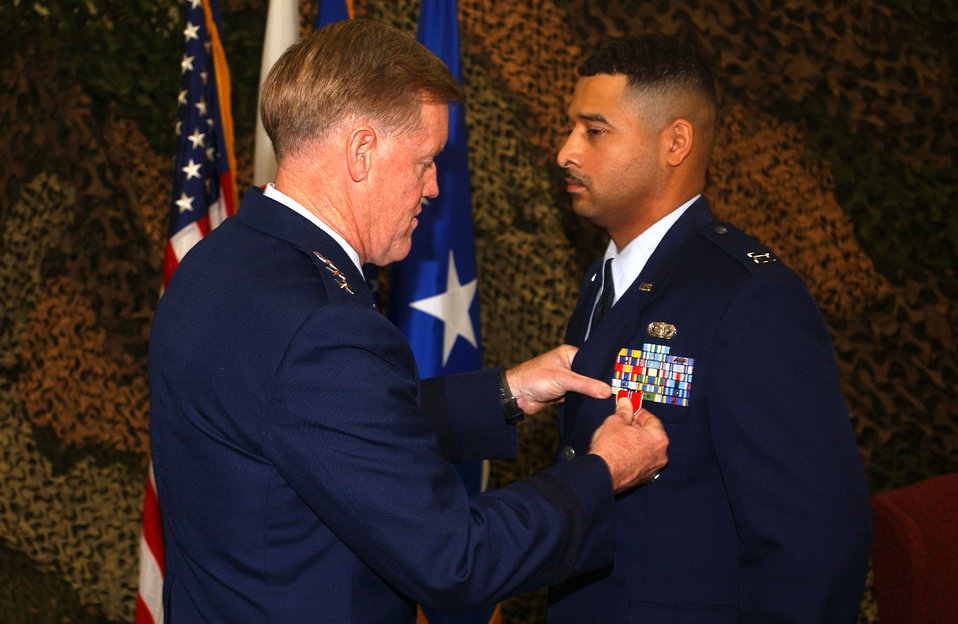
Security forces member receives Bronze Star

Capt. Russell Waight receives a Bronze Star from 5th Air Force Commander Lt. Gen. Bruce Wright during a Nov. 15 ceremony at Kadena Air Base, Japan. Capt Waight is assigned to the 18th Security Forces Squadron.